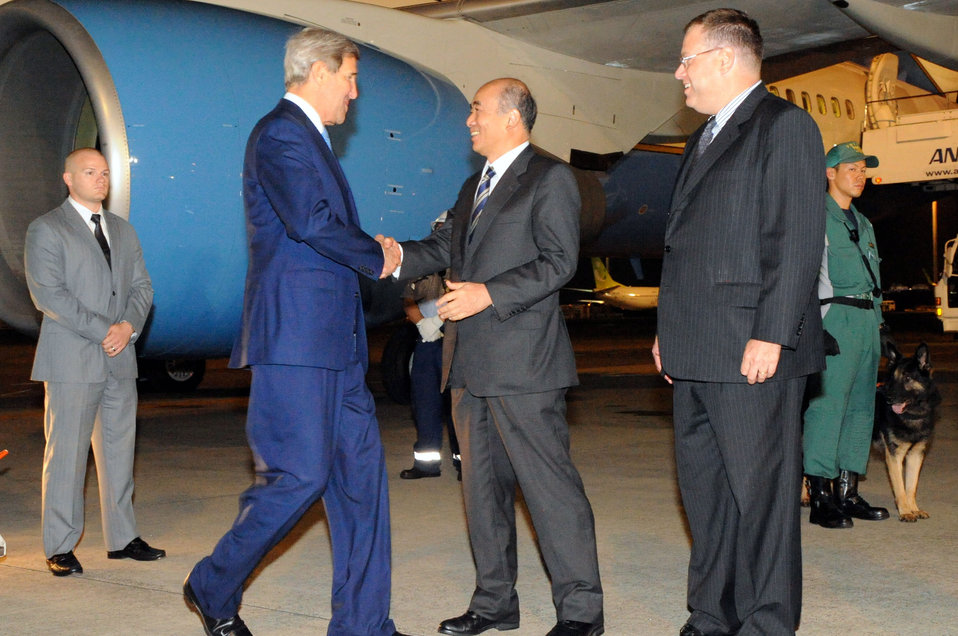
Secretary Kerry Is Greeted By Japanese Ambassador Sasae

U.S. Secretary of State John Kerry is greeted by Japanese Ambassador to the United States Kenichiro Sasae upon arriving in Tokyo, Japan, on October 2, 2013, for meetings with U.S. Secretary of Defense Chuck Hagel and their Japanese counterparts. Watching is Embassy Tokyo's Charge d'Affaires ad interim Kurt Tong.